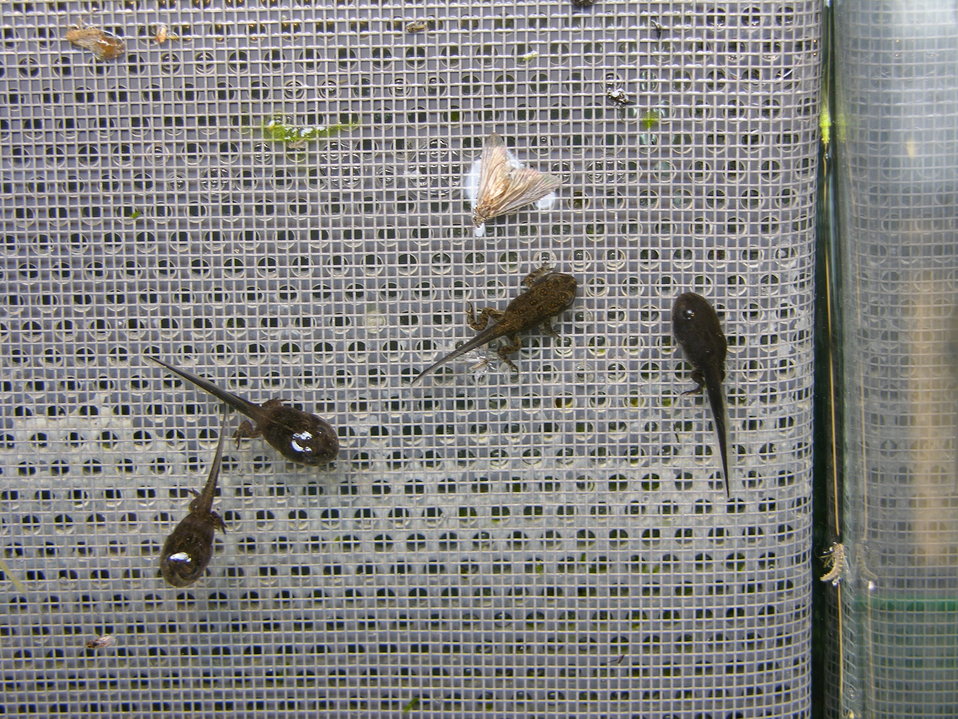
Wyoming Tadpoles

Tadpoles at the Saratoga Fish Hatchery.